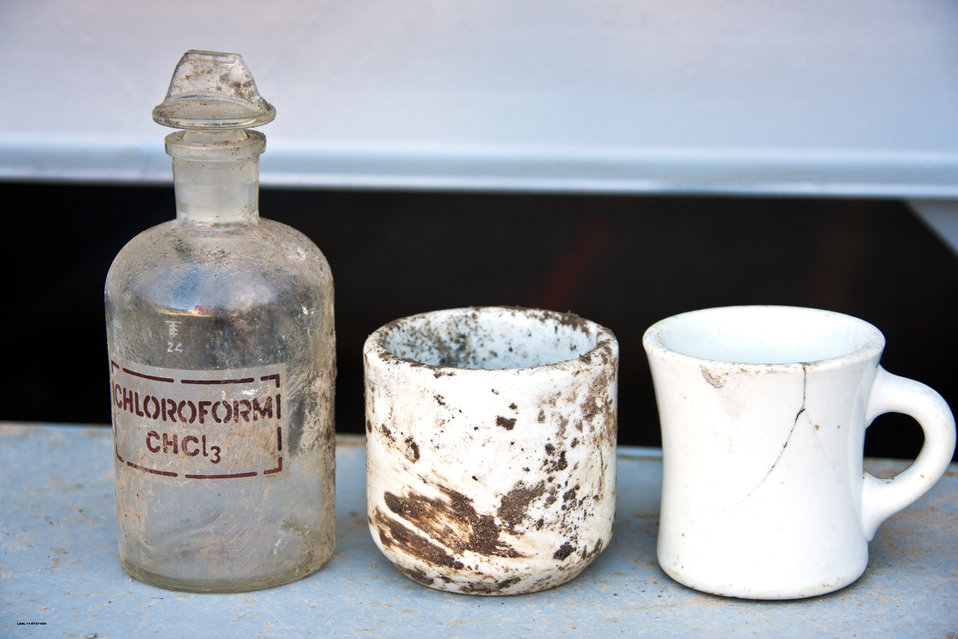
Los Alamos Dig Unveils Items Ranging from Military Trucks to Toothbrush

An old beaker and coffee cups were among the items found in MDA-B.

In a $110 million Recovery Act project at Los Alamos National Laboratory, workers are excavating a waste disposal site known as Material Disposal Area B (MDA-B). Completion of the MDA-B cleanup will reduce EM’s legacy footprint by more than 260,000 square feet.